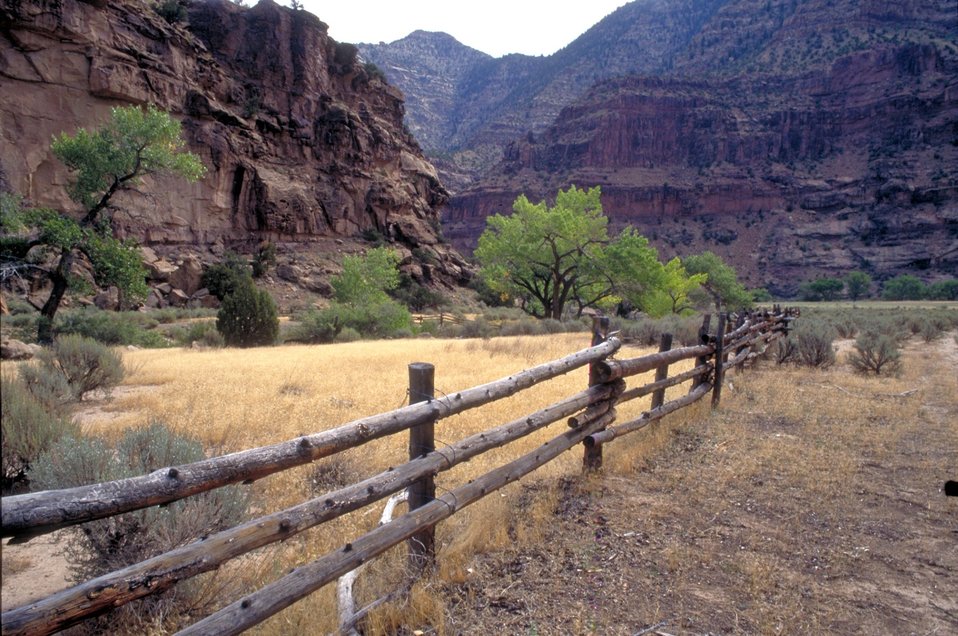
Desolation/Gray Canyons near Price, Utah.